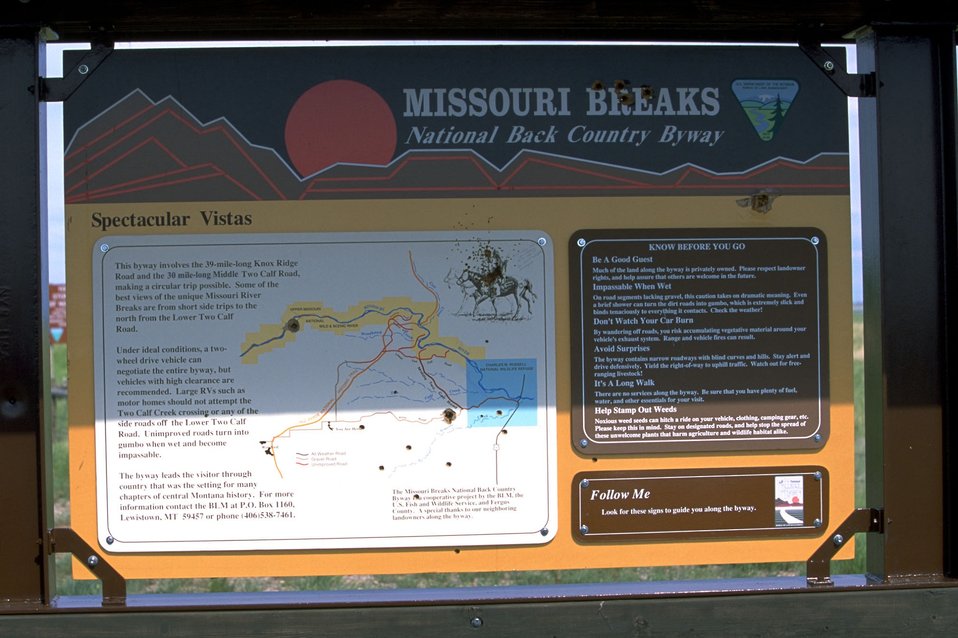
Bullet holes in the Kiosk on Knox Ridge Road